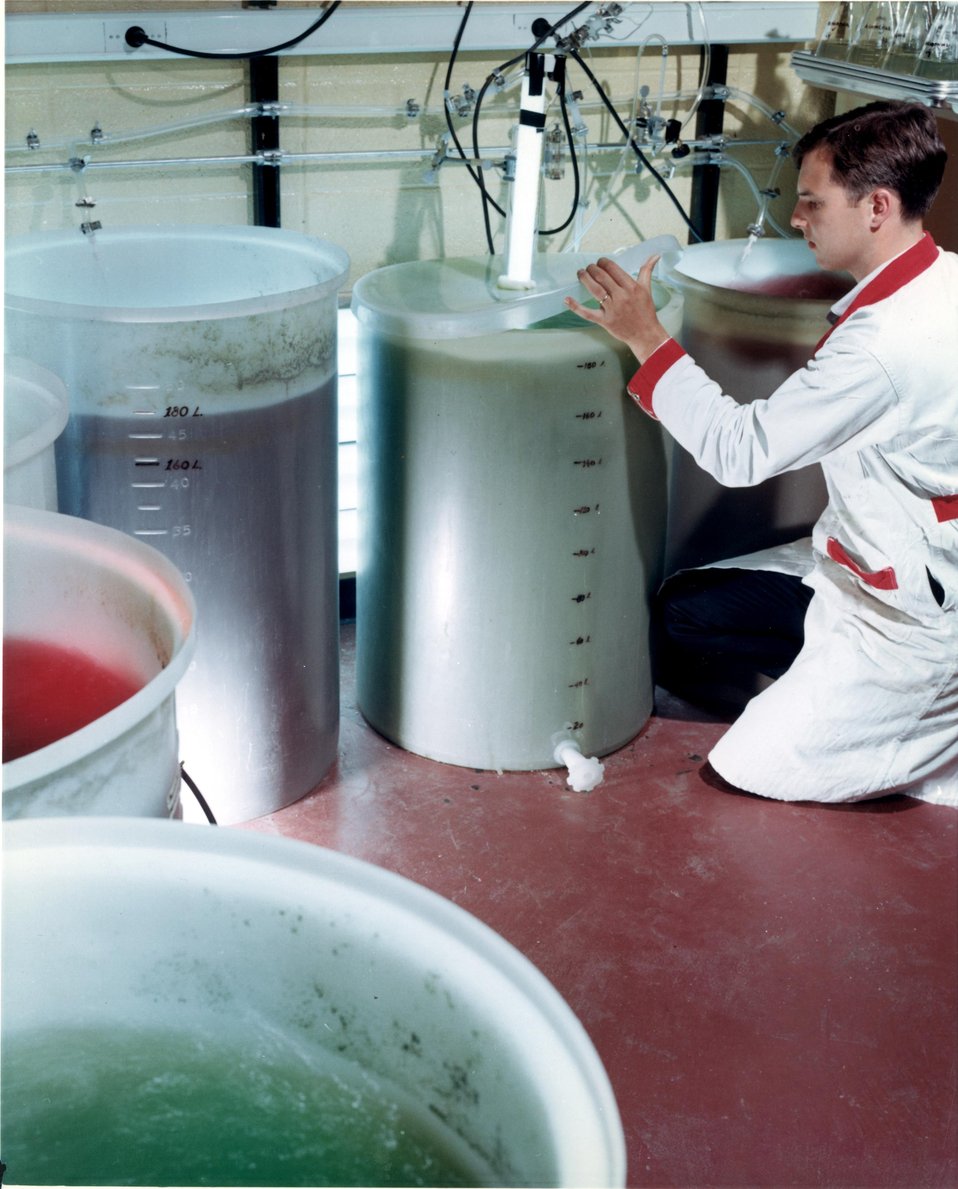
Examining large cultures (50 gallons) of blue-green algae. The algae are used in studies on the structure of photosynthetic bile pigments. c. 1966